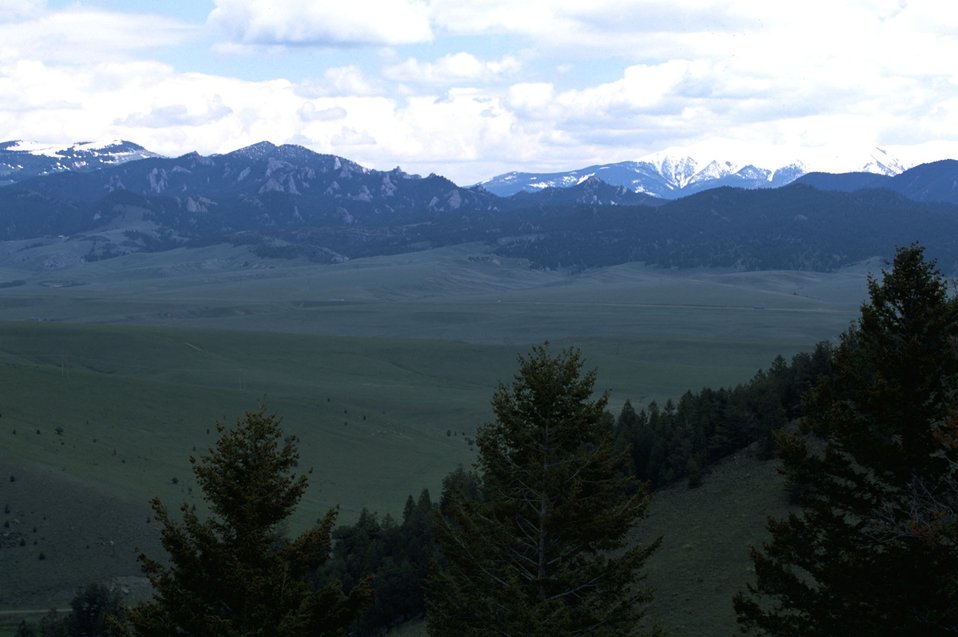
View to Humbug Spires WSA